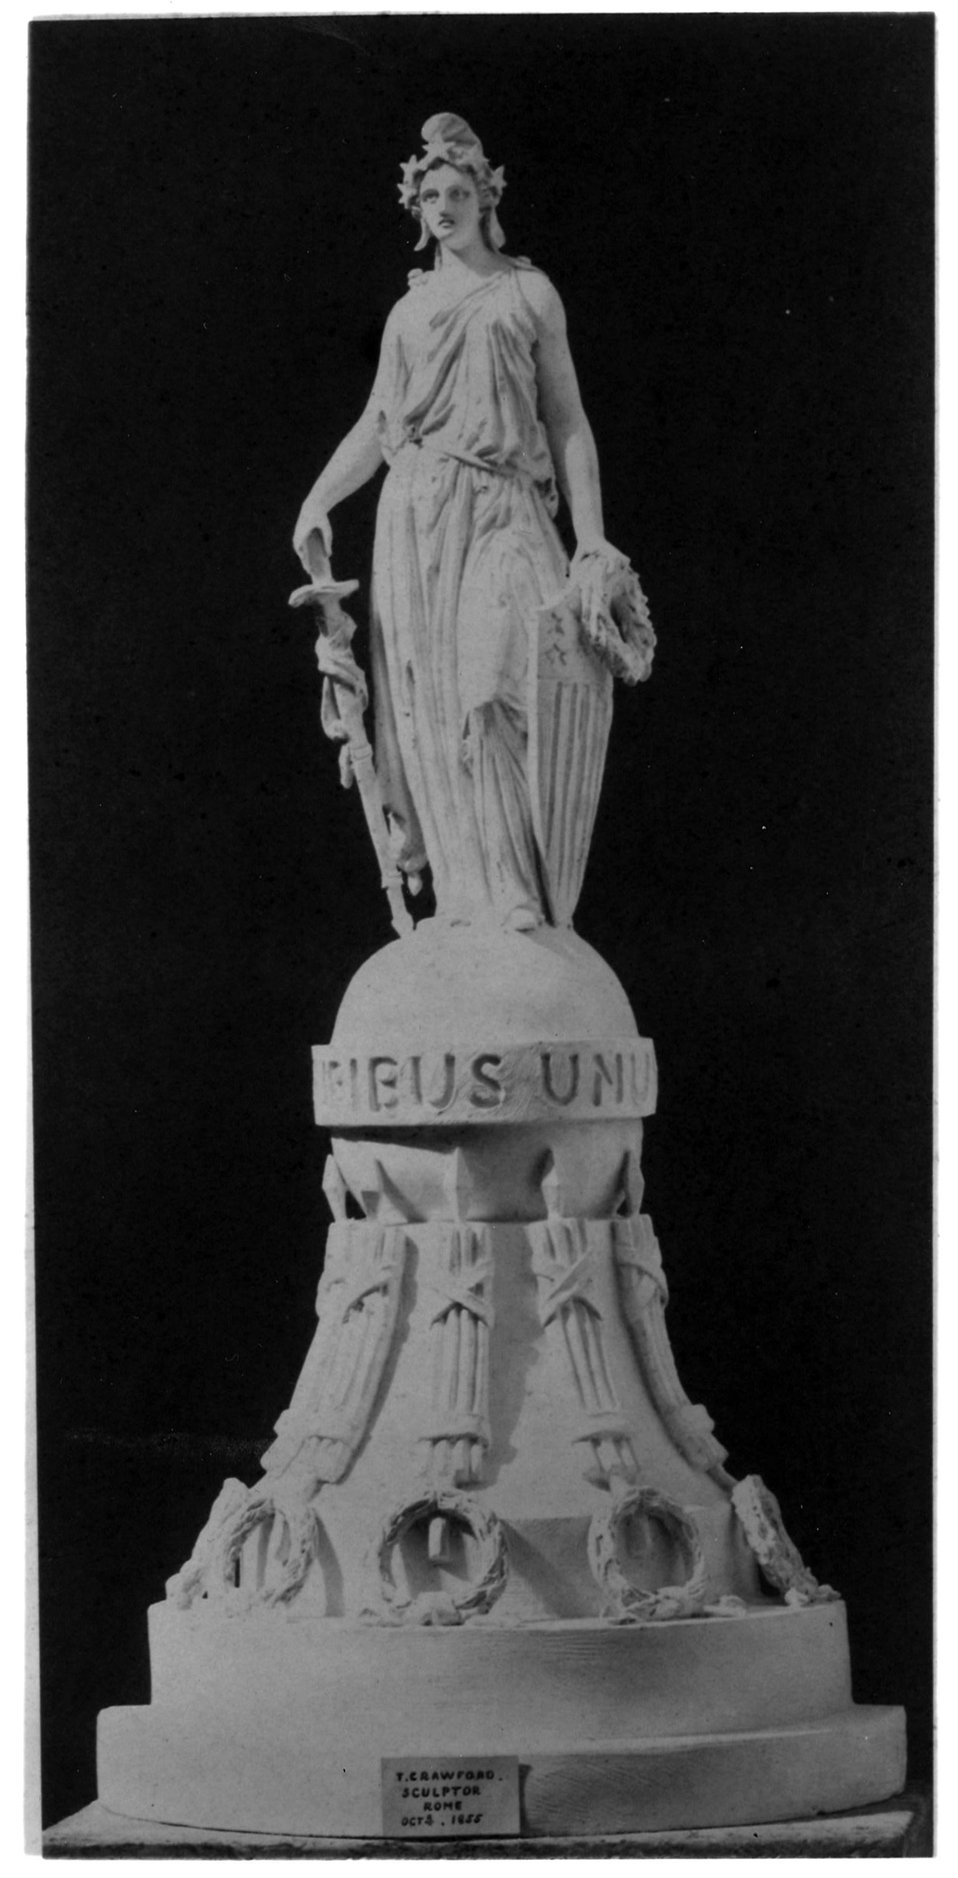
Second Design for the Statue of Freedom

In his second draft for the design of the Statue of Freedom Thomas Crawford sculpted a graceful figure in a classical dress wearing a liberty cap encircled with stars, holding a shield, wreath, and sword, which he said represented Armed Liberty.

It was sent to Secretary of War Jefferson Davis, who was in charge of the overall construction at the Capitol. Davis objected to the liberty cap, the symbol of freed slaves, because “its history renders it inappropriate to a people who were born free and should not be enslaved.” Davis suggested a helmet with a circle of stars, which Crawford incorporated in the final design.

Learn more about the design of the Statue of Freedom.